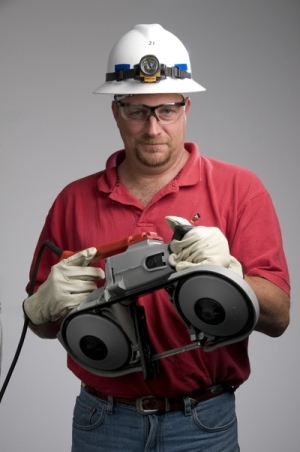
James Hall, 43, is no stranger to employment hardships. As a sheet-metal worker, he has become accustomed to spending extended amounts of time away from home to support his family. Having worked throughout the United States as a skilled member of his craft, Hall is thankful for the recent employment opportunities at SRS funded by the American Recovery and Reinvestment Act.